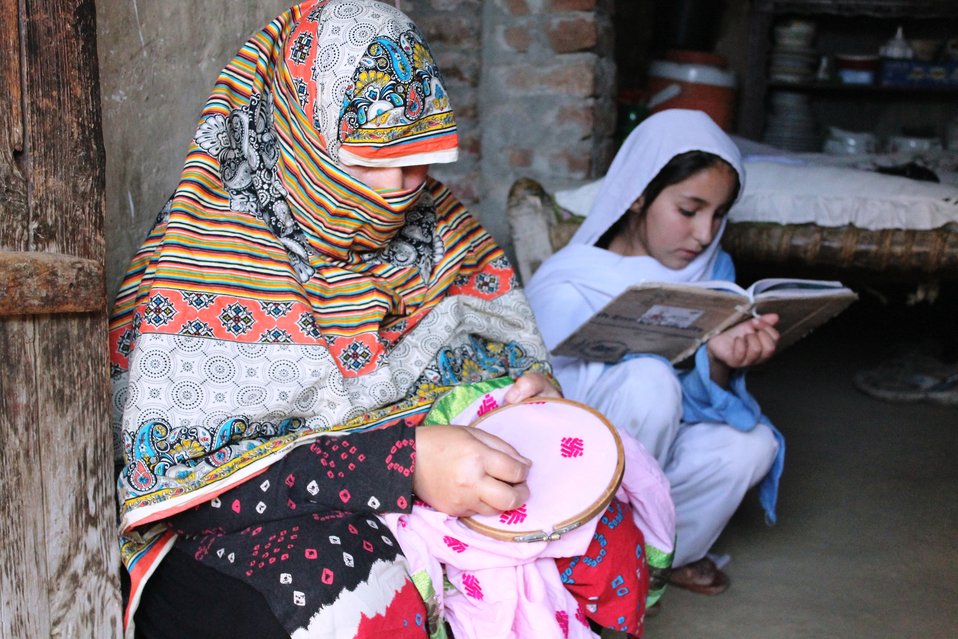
Embellished Fabrics Value Chain Development Initiative under the USAID's Entrepreneurs Project

Swat, October 18, 2012: Shabnum, 38, is thankful to USAID for providing her a sustainable source of income through its Embellished Fabric Value Chain Project. “If I had not received the assistance on time, I probably would have married off my 12 years old daughter, Mubeena, who was already taken out of the school and put to work. Today, I make enough money to provide for her and send her back to school where she is continuing with her primary education.” USAID is committed to promote economic empowerment of women and expand avenues for girls to access basic education.